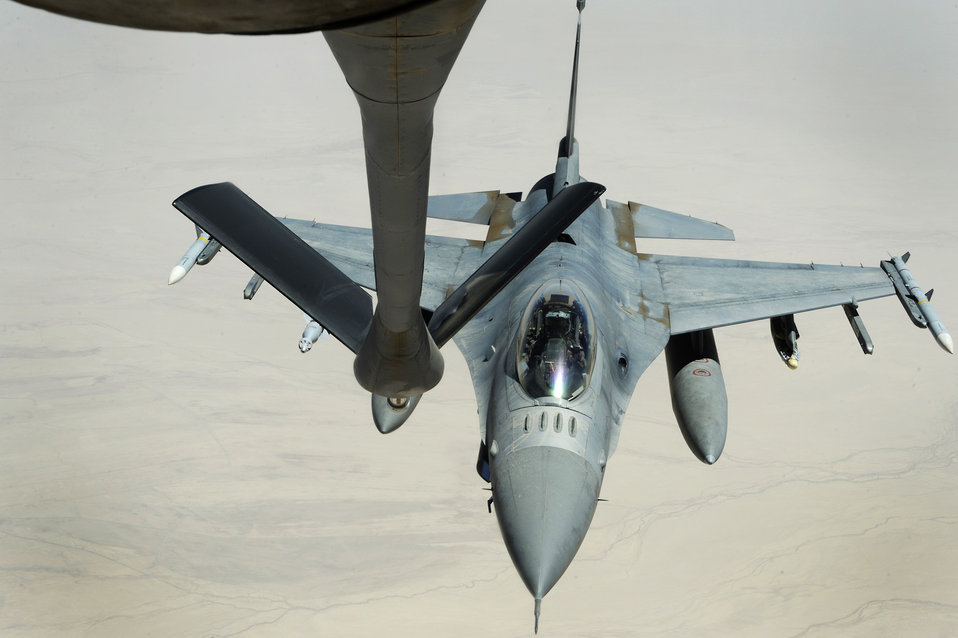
Refueling operations over Iraq

An F-16CJ Fighting Falcon approaches a KC-135 Stratotanker for refueling over Iraq in support of Operation Iraqi Freedom.